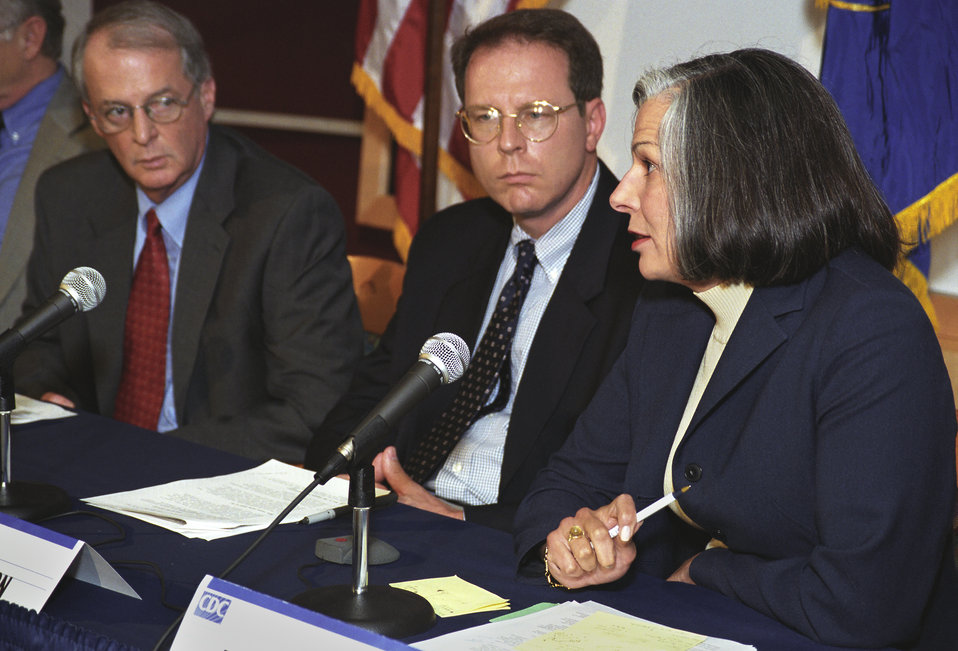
Centers for Disease Control and Prevention Bioterrorism Preparedness Press Briefing, August 27, 2002.